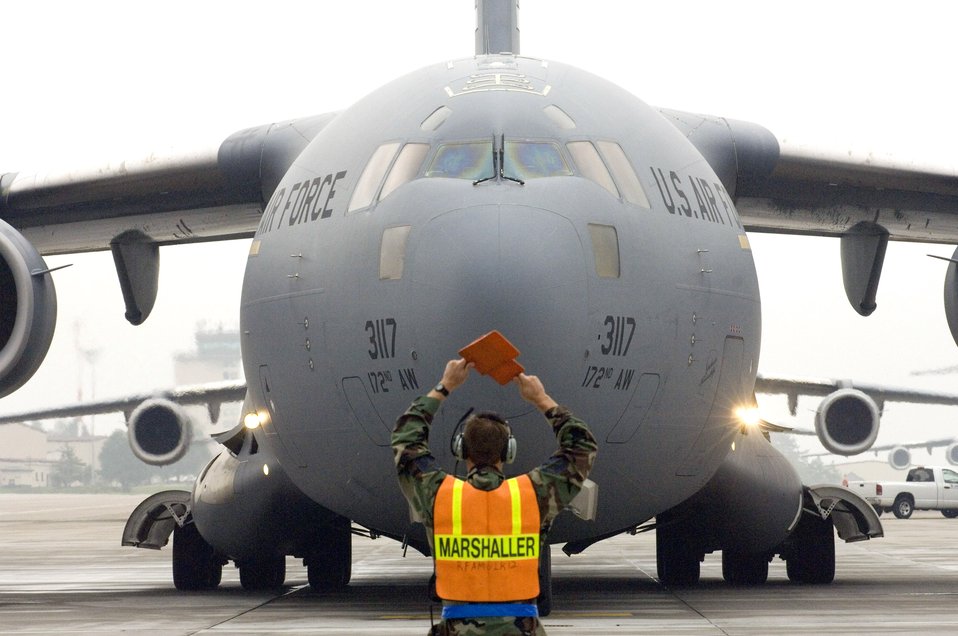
Aeromedical evacuation mission

A C-17 Globemaster III is marshaled into its parking spot at Ramstein Air Base, Germany, after completing an aeromedical evacuation mission Sept. 18. The 791st Expeditionary Aeromedical Evacuation Squadron is flying aerovac missions from Ramstein supporting operations Iraqi Freedom and Enduring Freedom.